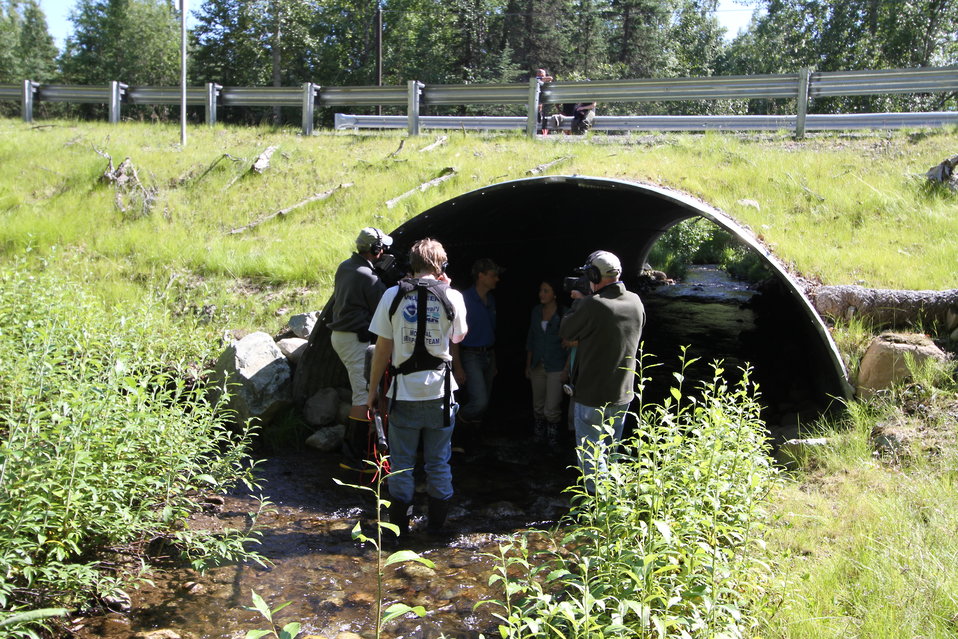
Aqua Kids TV features Alaska Fish Passage

Aqua Kids film crew and cast document fish passage projects in Southcentral Alaska. USFWS/Katrina Mueller